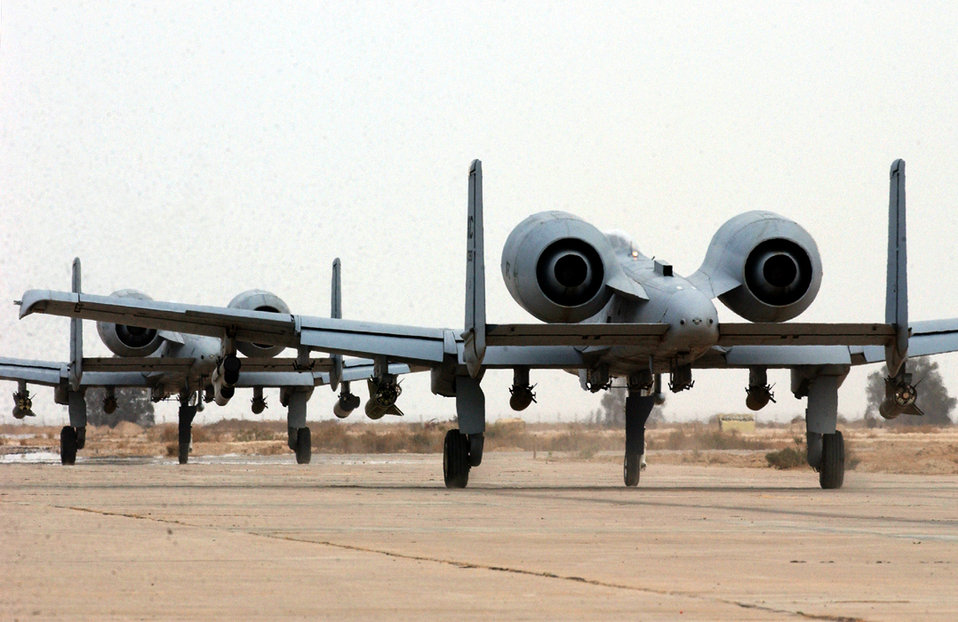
To the fight

OPERATION IRAQI FREEDOM -- A-10 Thunderbolt IIs from the 442nd Fighter Wing taxi before a combat mission over Iraq on April 18. The 442nd FW from Whiteman Air Force Base, Mo., is deployed to Tallil Air Base in southern Iraq.